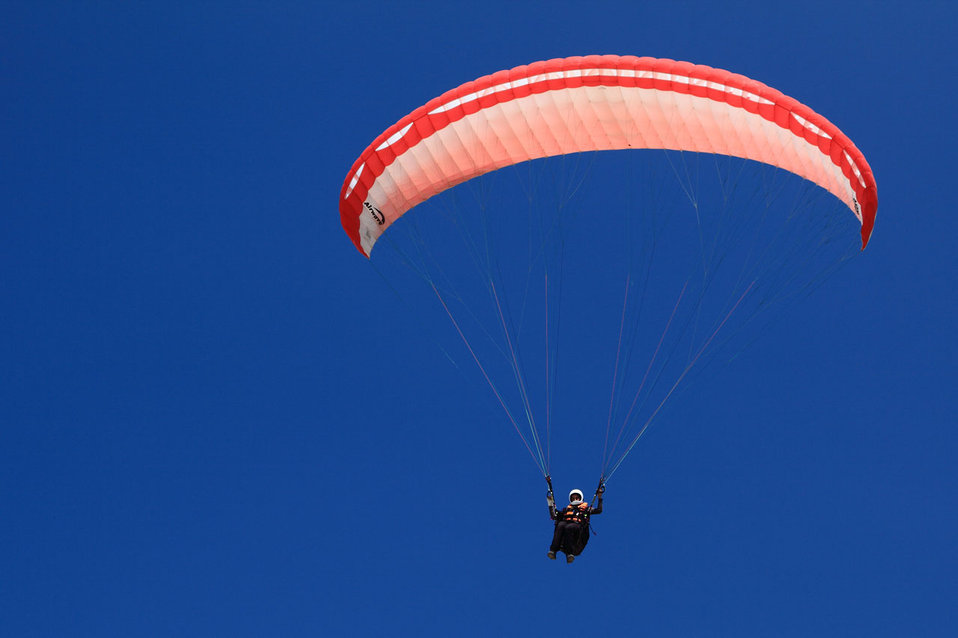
Paragliding

Paraglider with red parachute against blue sky.